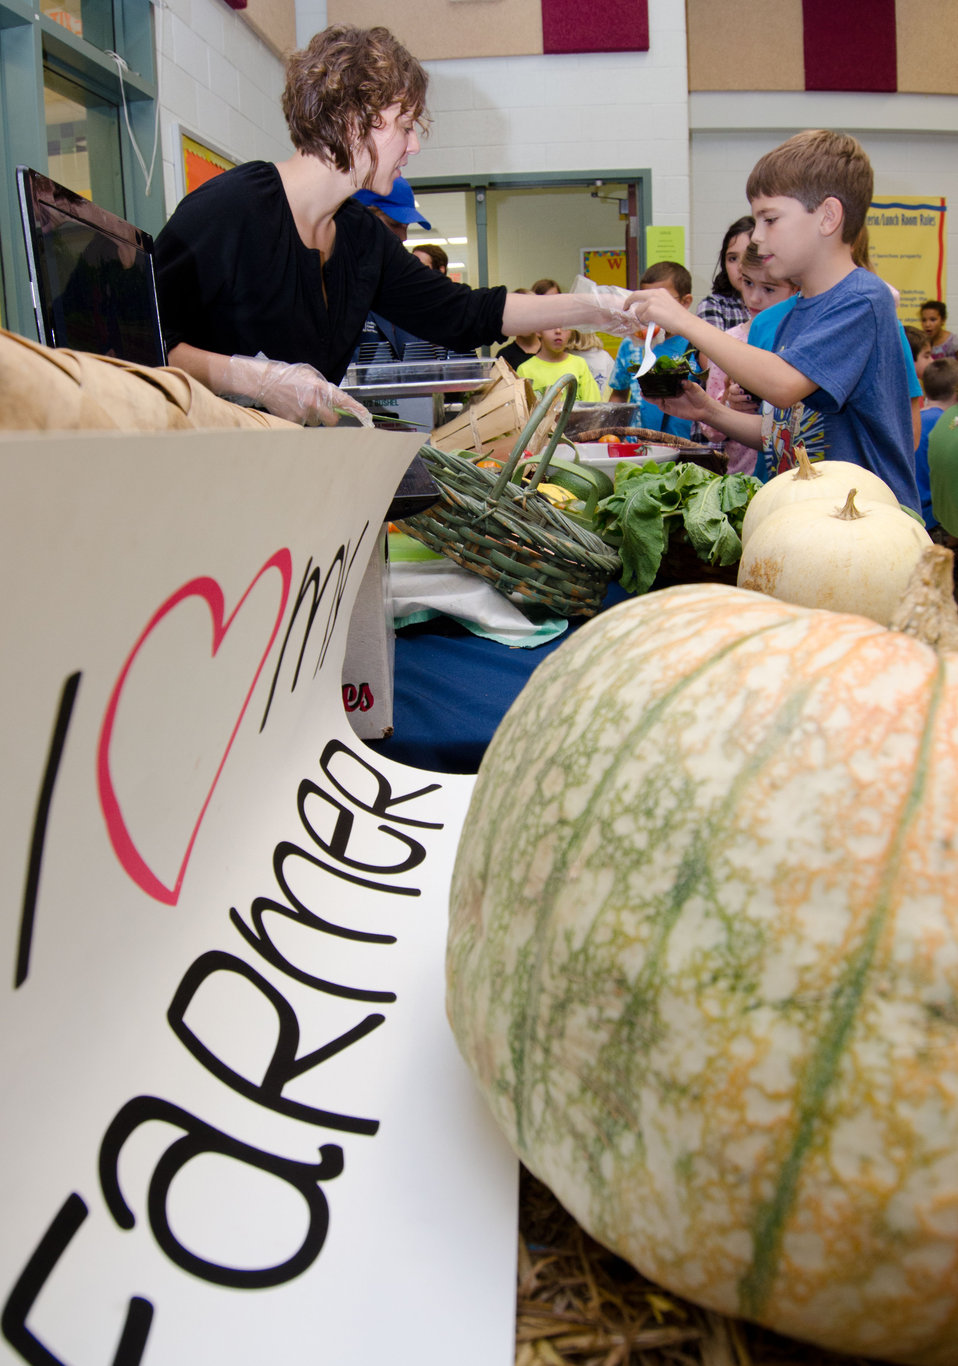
Maple Avenue Market Farm co-owner Sara Guerre invited students to learn about their local farmers, during a National School Lunch Week event at Nottingham Elementary School in Arlington, VA, on Wednesday, October 12, 2011. Farmers from Bigg Riggs Farm in Hampshire County, WV, and Maple Avenue Market Farm in Vienna, VA were very popular with the students. Today's menu included roasted chicken, roasted butternut squash with dried cranberries, farm fresh mixed lettuce salad, turkey wraps, pita wedges, hot muffins, carrots, Asian pears and more.